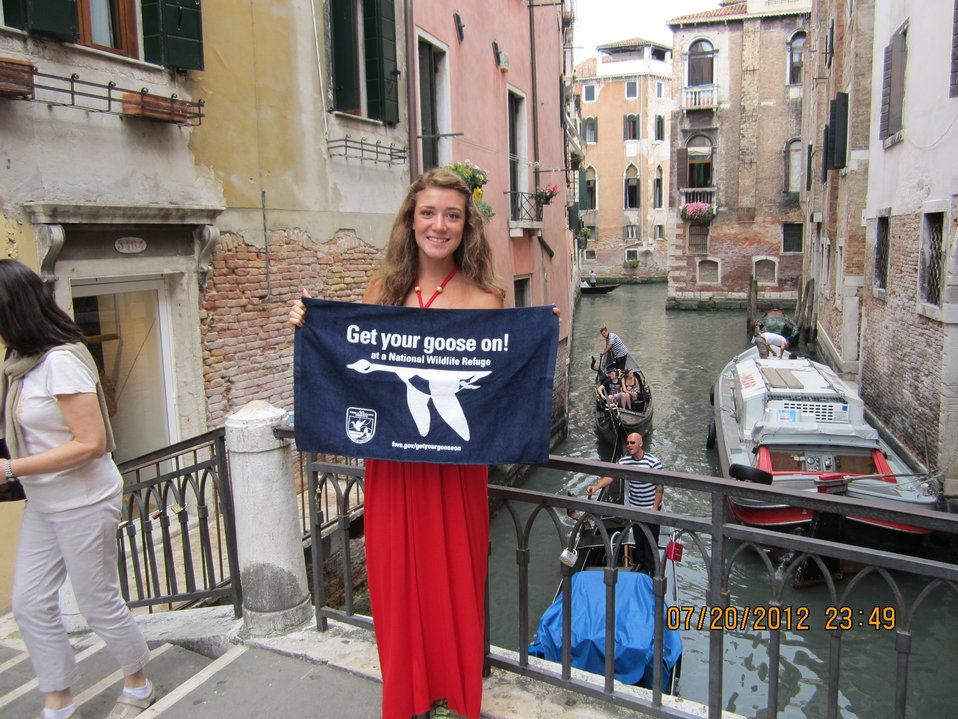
Get Your Goose On! - Venice